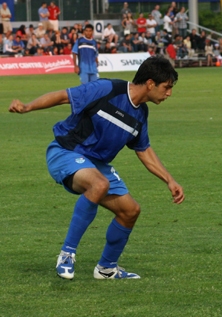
Tim Merritt